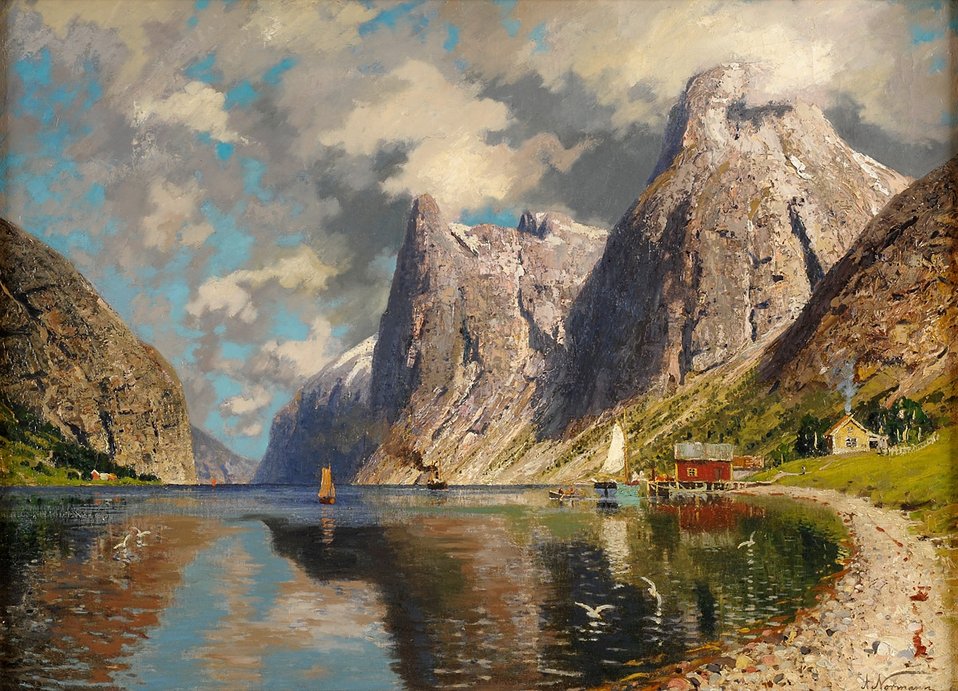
Adelsteen Normann Sommer im Fjord